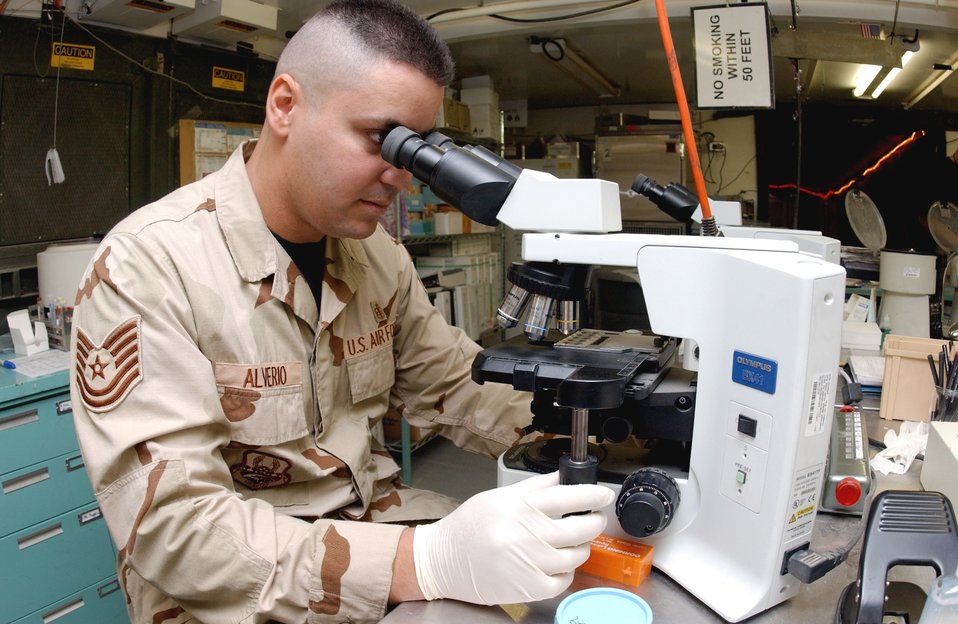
Hospital lab in theater

Tech. Sgt. Alex Alverio examines a sample under a high powered microscope at the Air Force Theater Hospital laboratory at Balad Air Base, Iraq. He is deployed here from Wilford Hall Medical Center at Lackland Air Force Base, Texas.